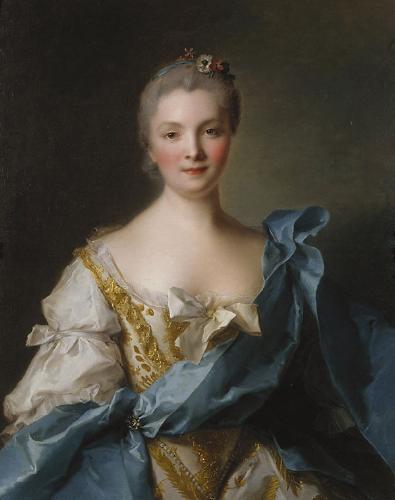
'Madame de La Porte' oil on canvas painting by Jean-Marc Nattier, 1754, Art Gallery of New South Wales